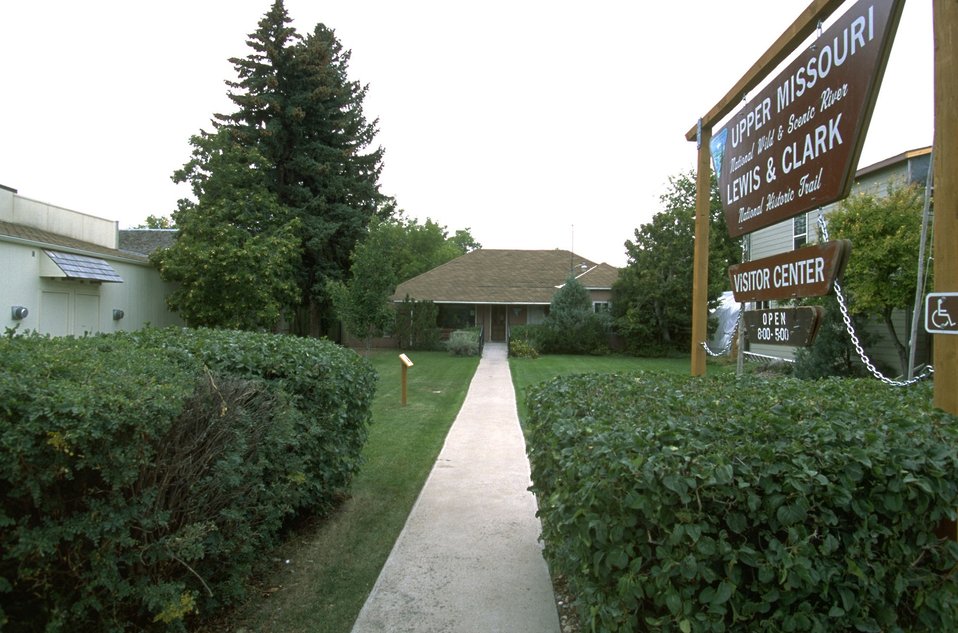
Old BLM visitor contact station in Fort Benton